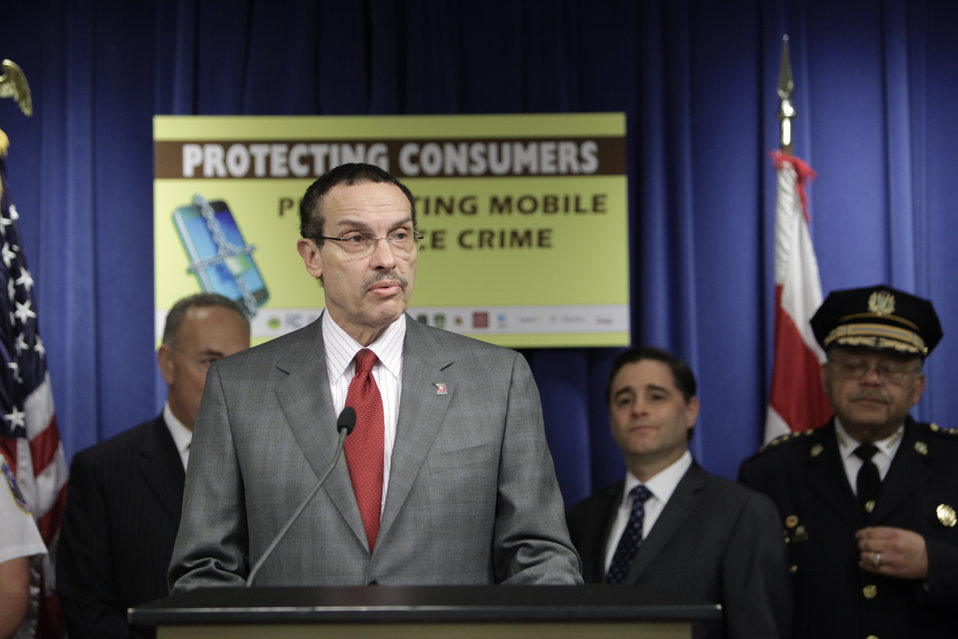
Mayor Vincent Gray Talks About Consumer Protection

Mayor Vincent C. Gray of Washington, D.C. speaks about protecting consumers and their smartphone devices from theft at the John A. Wilson Building in Washington, DC on April 10, 2012.